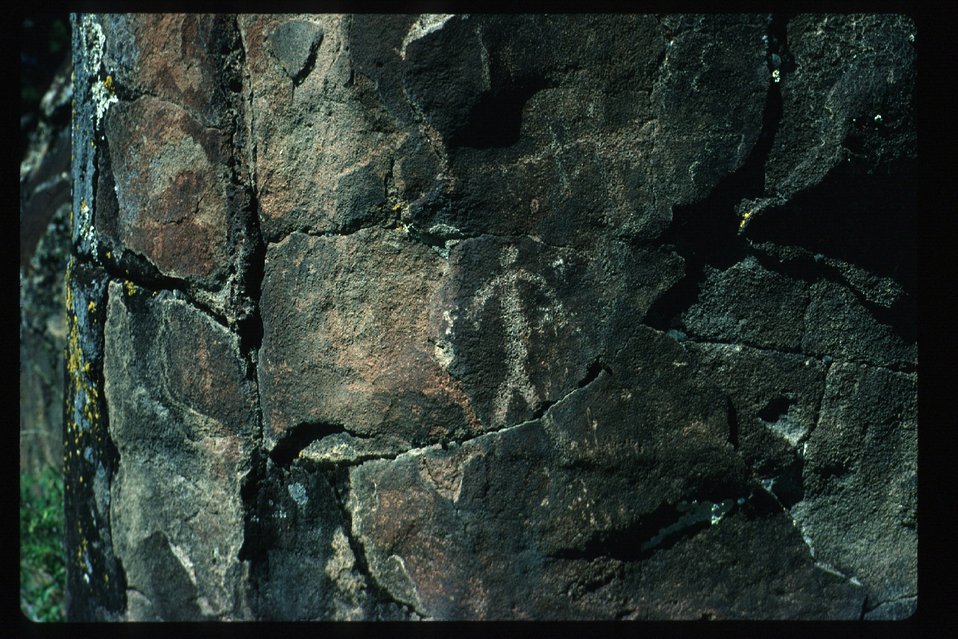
Cultural Petroglyphs Archeology near Camus and Pole Creeks LSRD Lower Snake River District